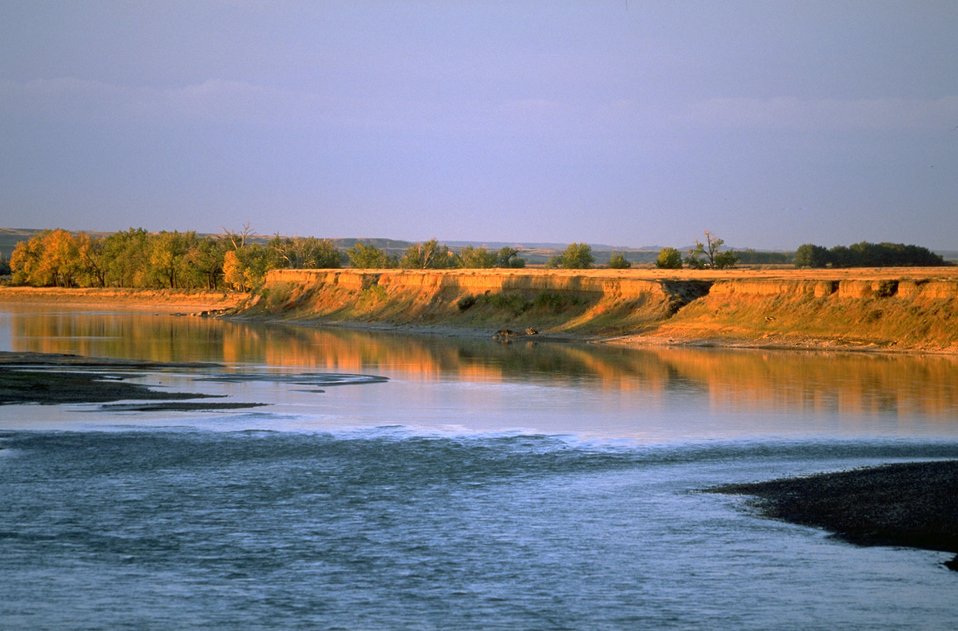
Sun shining on a Yellowstone River bank with reflection in the water